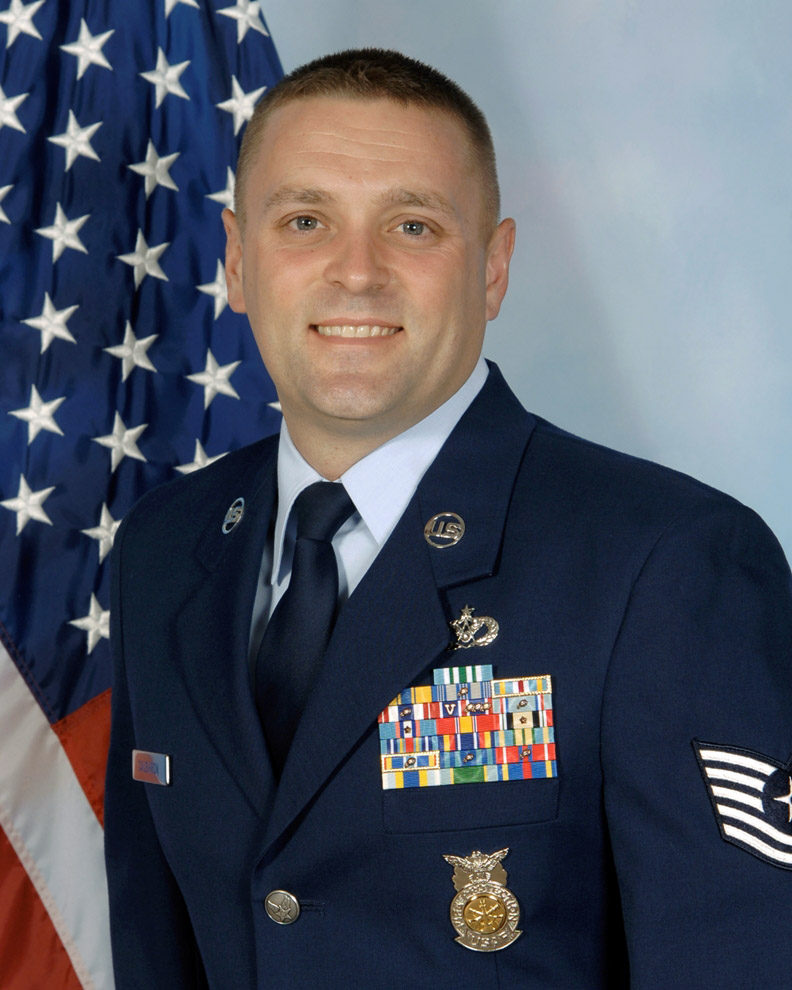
Air Force officials honor 12 Outstanding Airmen of the Year

Tech Sgt. James Caughron of McConnell Air Force Base, Kan., is one of the 12 Outstanding Airmen for 2008.